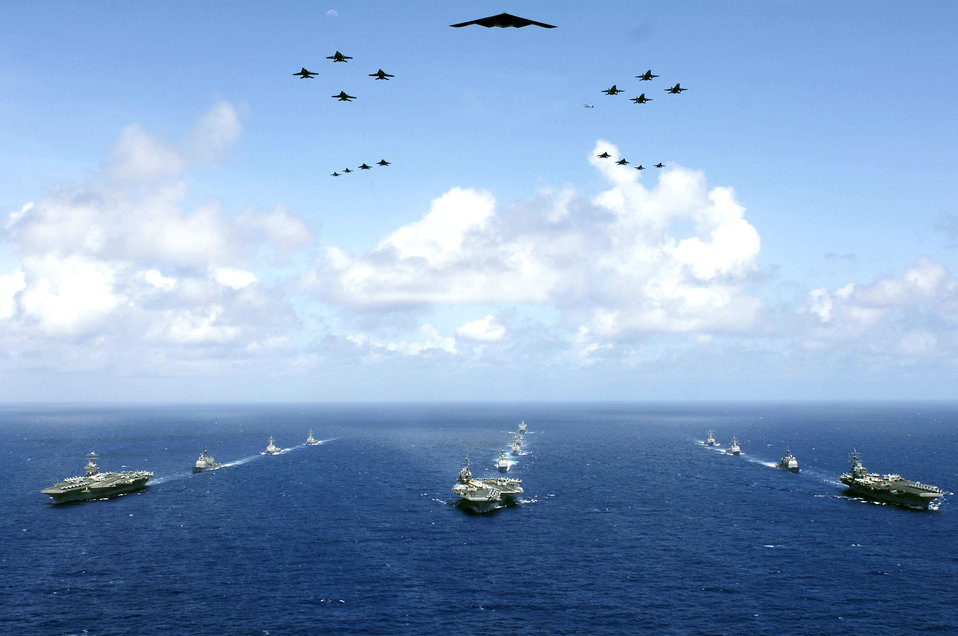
Joint operations in the Pacific

A B-2 Spirit and 16 other aircraft from the Air Force, Navy and Marine Corps fly over the USS Kitty Hawk, USS Ronald Reagan and USS Abraham Lincoln carrier strike groups in the western Pacific Ocean on Sunday, June 18, to kick off Exercise Valiant Shield 2006. The joint exercise consists of 28 naval vessels, more than 300 aircraft and approximately 20,000 servicemembers.